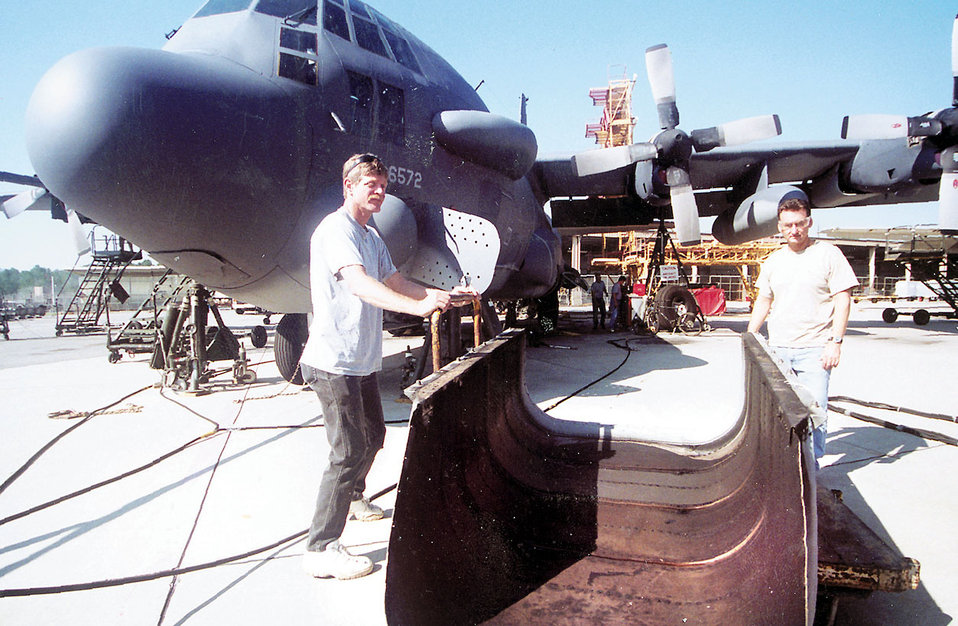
Gunshp Upgrades

ROBINS AIR FORCE BASE, Ga. -- Ray Courington, left, and Bruce Daniel inspect the infrared suppressor system, nicknamed a